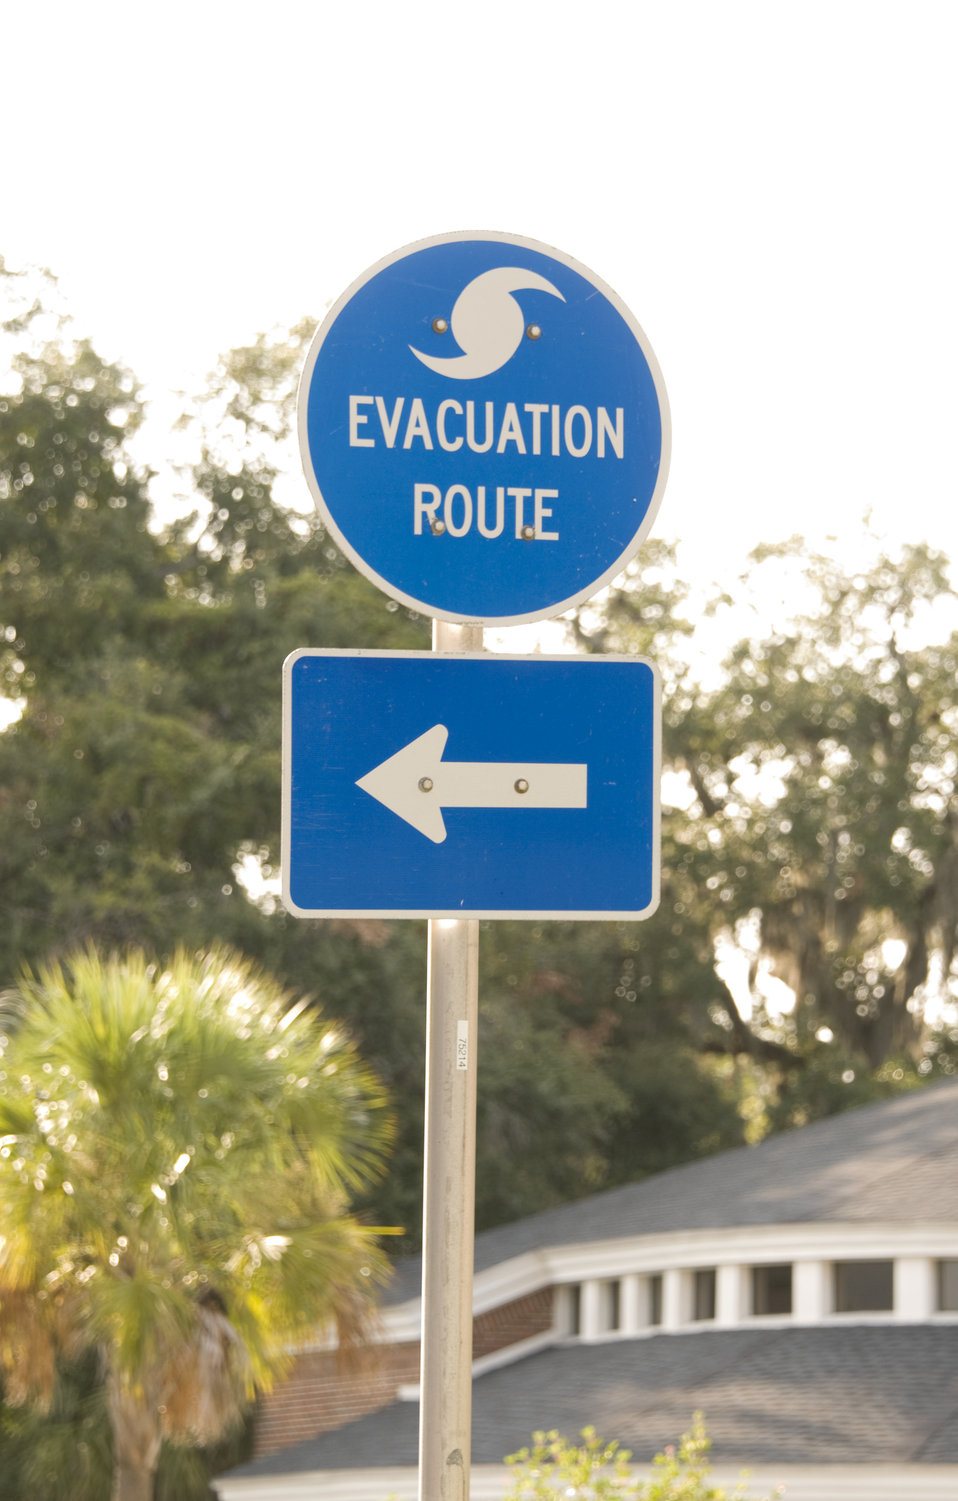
This image depicts a blue-colored sign consisting of two segments, a rectangle topped by a circle. The rectangular component indicates an arrow that points in the direction one need take when attempting to evacuate the region, and the circular component is displaying the universally-understood hurricane symbol, and the words, 'Evacuation Route'.